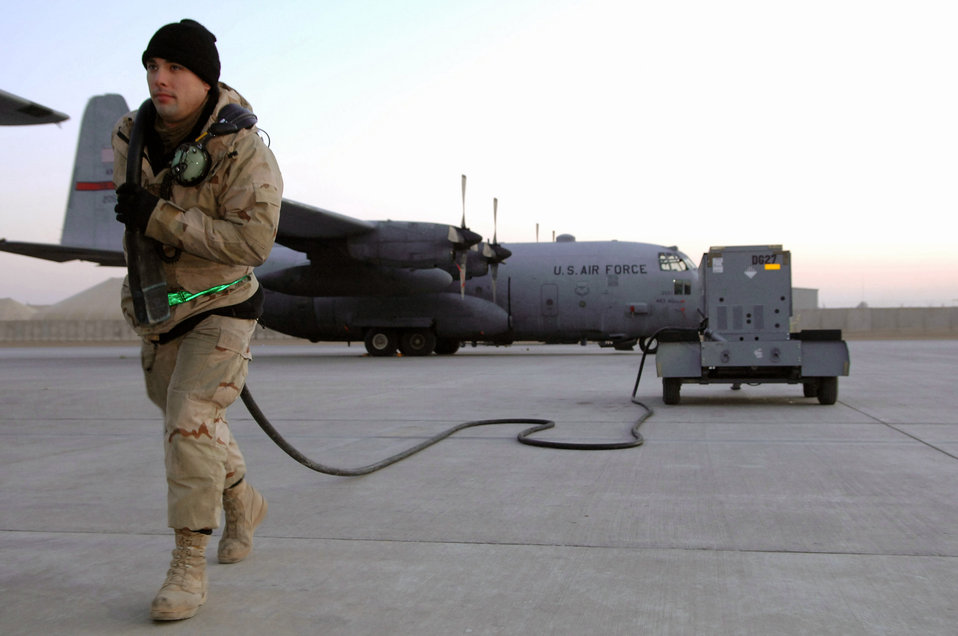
He's got the power

Airman 1st Class David Fabacher prepares to hook up a power generator to a C-130 Hercules Jan. 21 at Balad Air Base, Iraq. Airman Fabacher is electronic warfare systems technician with the 332nd Expeditionary Aircraft Maintenance Squadron.